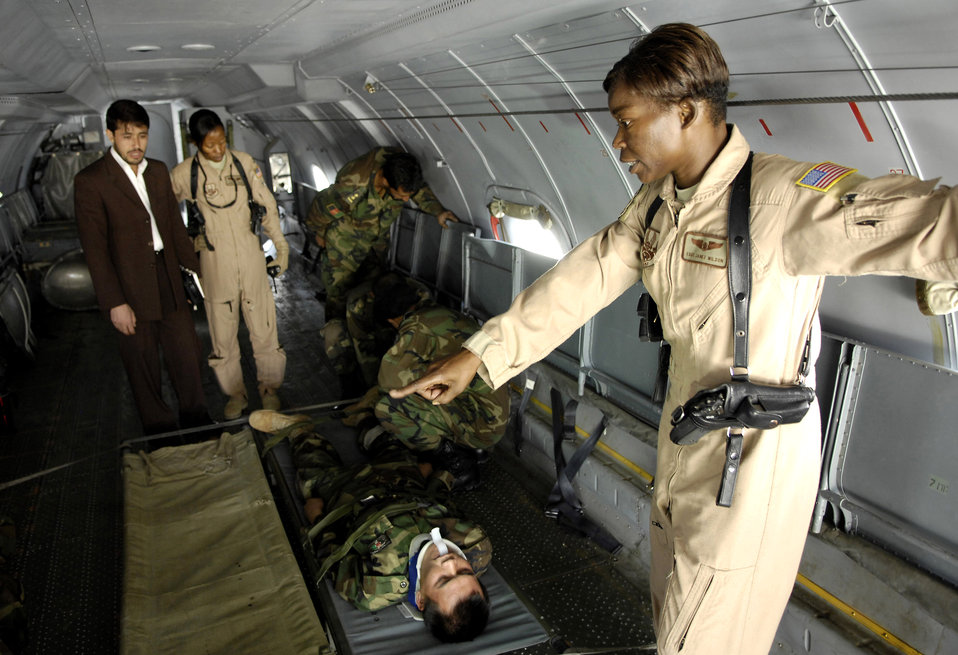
Airmen help Afghans stand up flight medicine clinic

Tech. Sgt. Janet Wilson observes a medical evacuation team as they load a patient onto an AN-32 cargo plane during an Oct. 20 training exercise at Kabul International Airport, Afghanistan. Sergeant Wilson is an Afghan national army air corps medical mentor with the air corps advisers group here. She is deployed from Pope Air Force Base, N.C.